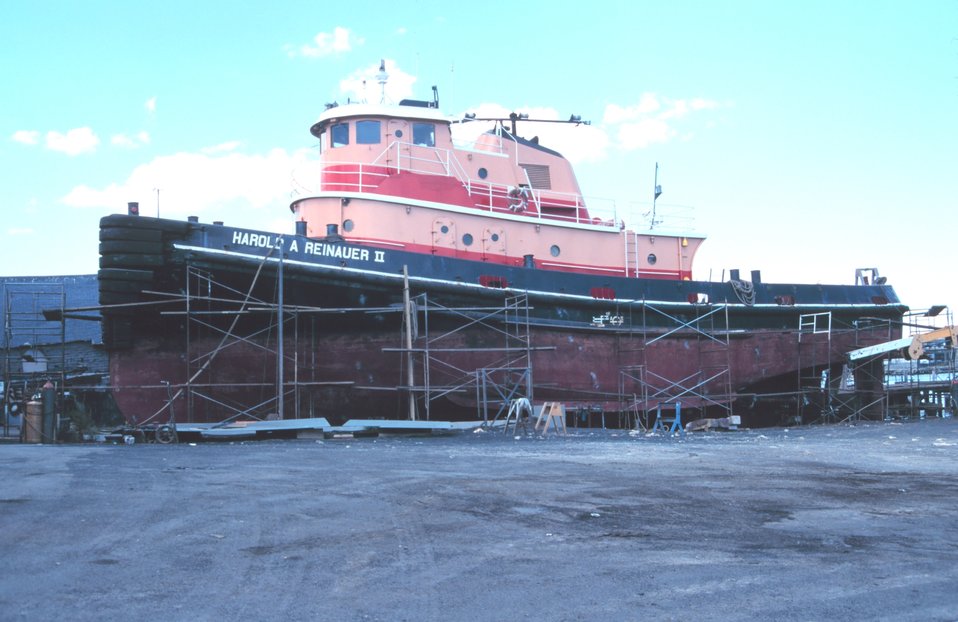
Tugboat on the ways at Gloucester.